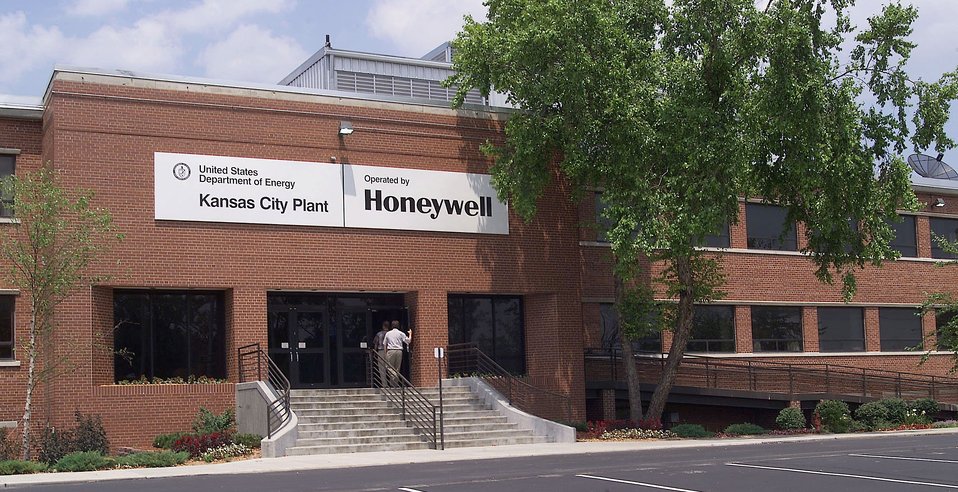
Front signage for the Kansas City Plant, November 2011.